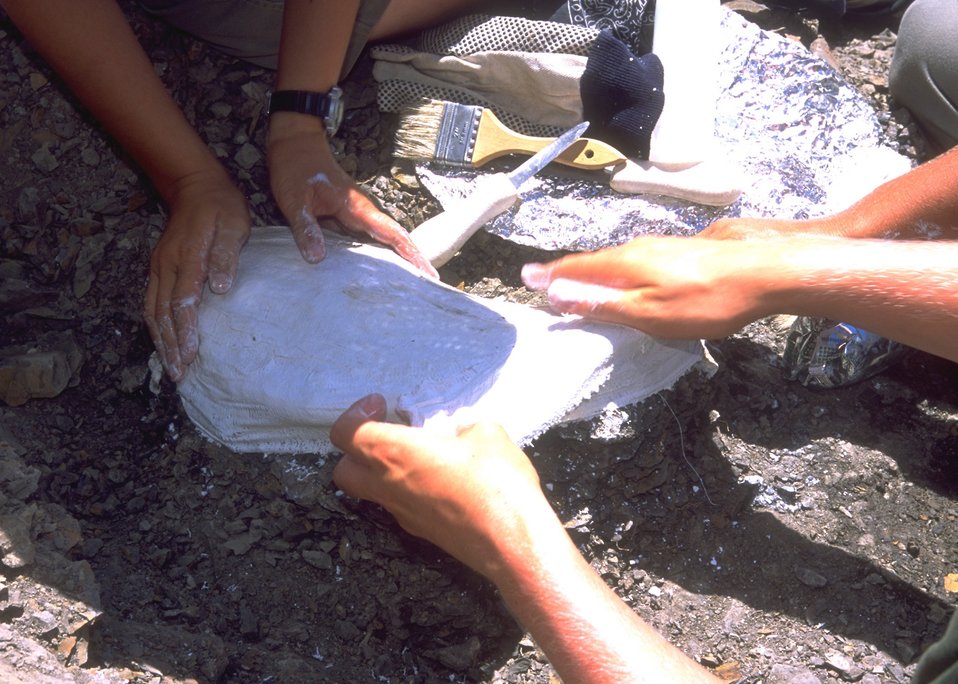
Paleontologist preparing a cast for a dinosaur bone, Lance Creek Fossil Area, Newcastle Field Office.